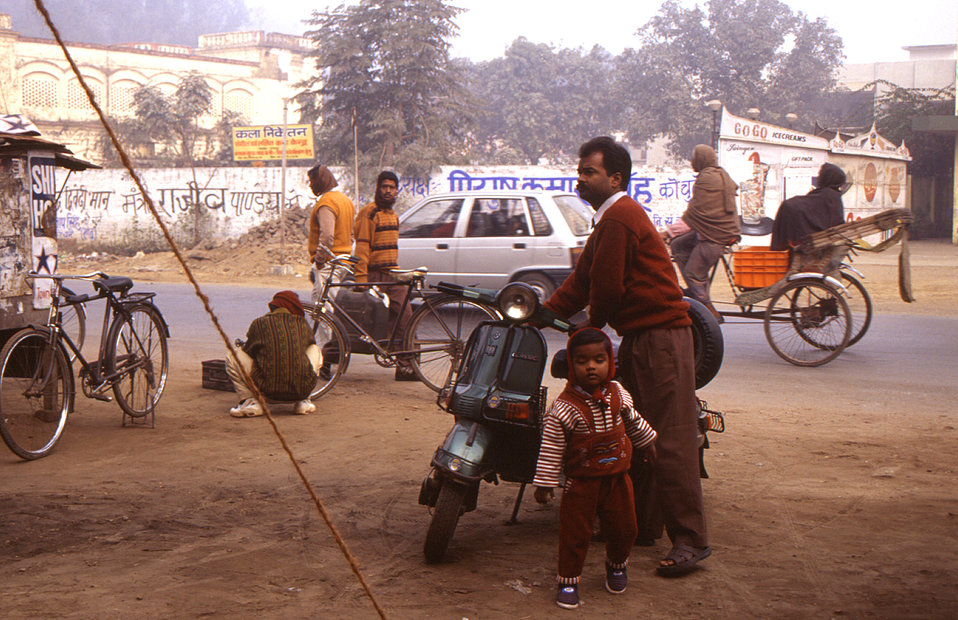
This 2000 photograph depicted a father who'd brought his child to this Indian polio vaccination center on his motor scooter. Often fathers brought their children to the clinic sites to be vaccinated. This image was provided by Chris Zahniser, B.S.N., R.N., M.P.H., a STOP Transmission of Polio (STOP) immunization initiative team member and photographer, Ms. Zahniser was at the time assigned to the state of Uttar Pradesh in northern India, and spent three months working in the Districts of Gorakhpur and Deoria.